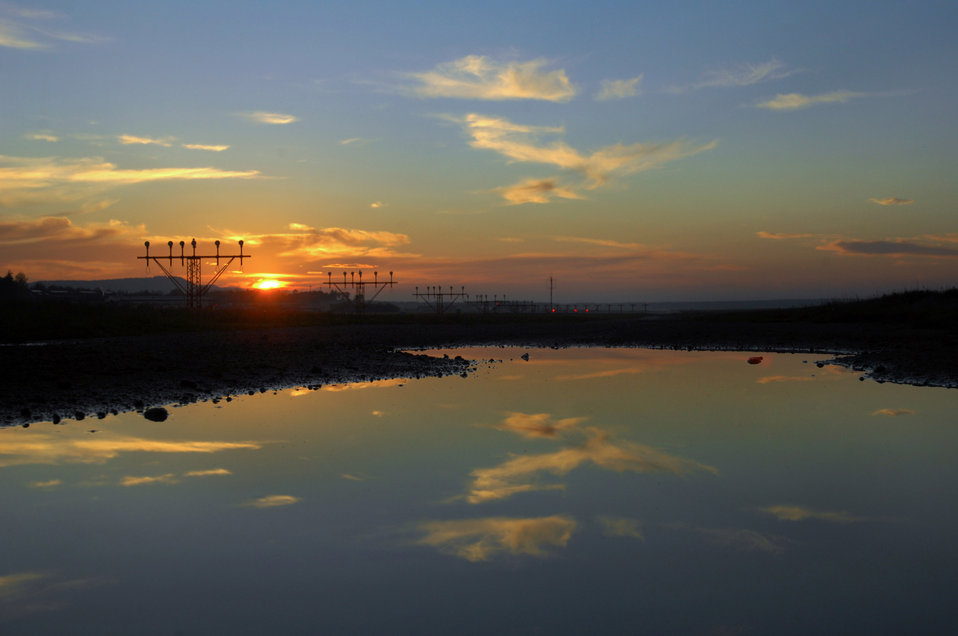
The sky is the limit

The sun sets over the flightline Nov. 3 at Ramstein Air Base, Germany. Ramstein AB officials handle more than 85 aircraft operations daily.